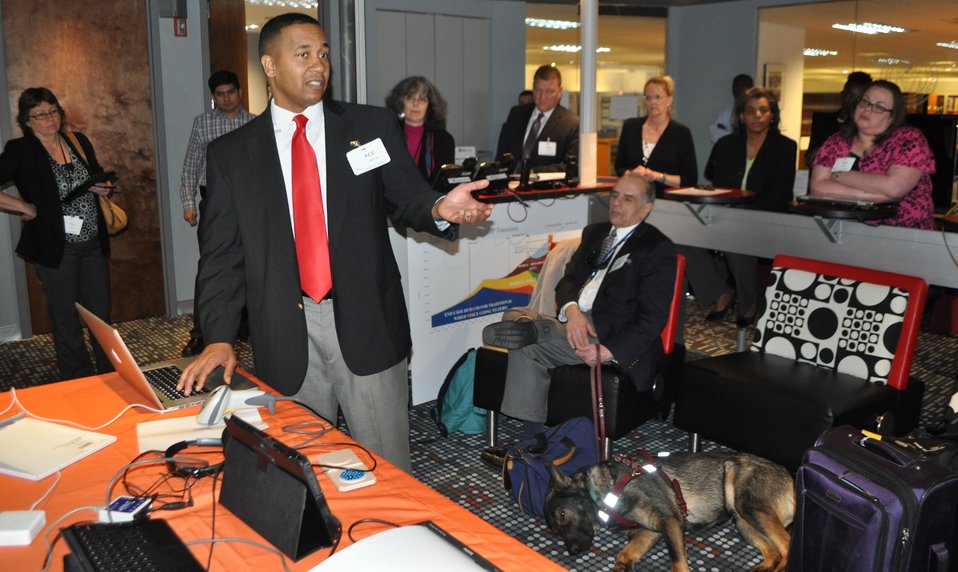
3.11.14 Accessibility and Innovation Initiative Speaker Series

Dr. Gilbert’s Demonstration of the Prime III Voting System in the FCC’s Technology Experience Center.